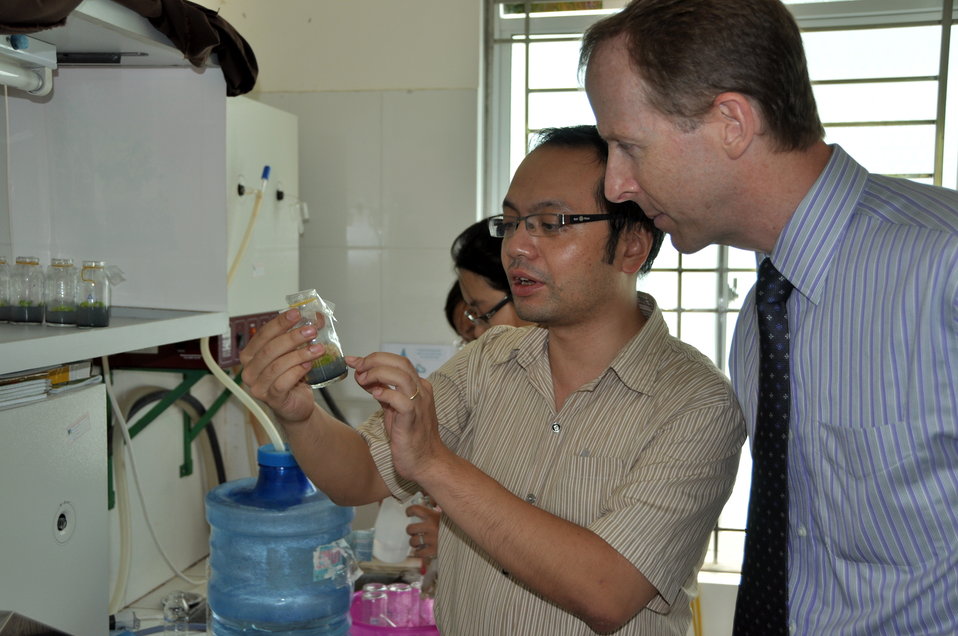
USAID Mission Director visits Danang University of Technology

Danang, JDanang, July 17, 2013
Photo: Richard Nyberg, USAID
uly 17, 2013